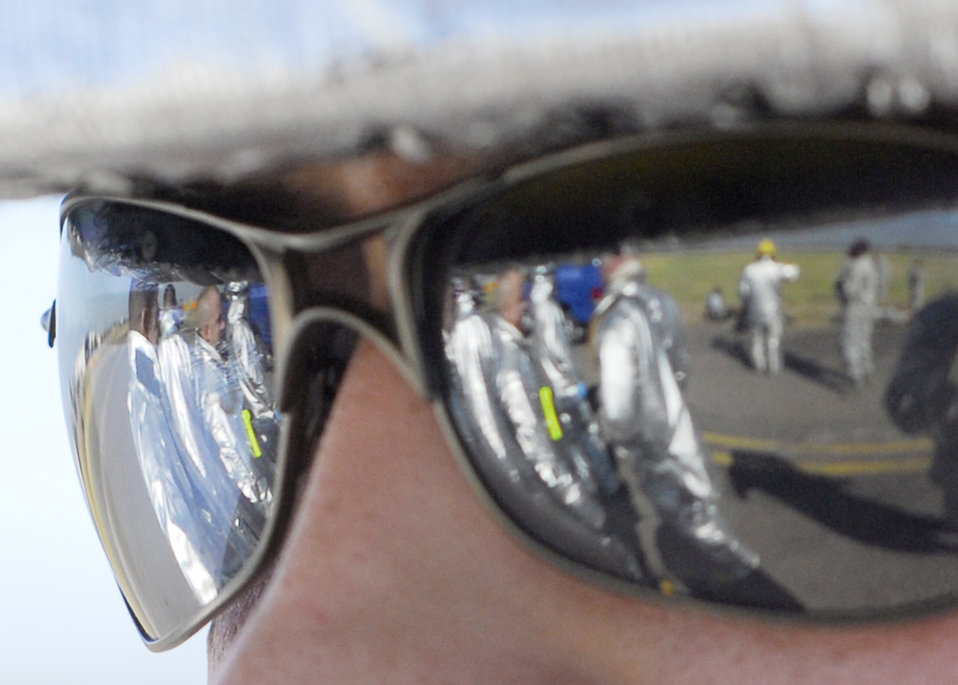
Hot zone

Firefighters from Soto Cano Air Base, Honduras, conduct a major accident response exercise Jan. 22, 2010, on the base flightline to hone their emergency response skills and evaluate their command and control functions.